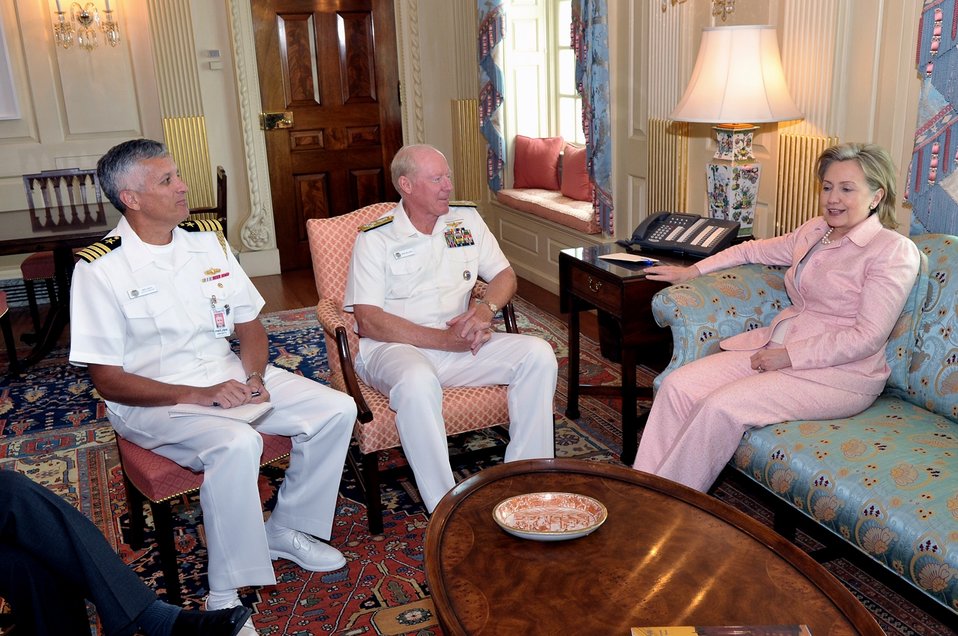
Secretary Clinton Meets With U.S. Admiral Robert F. Willard and Captain Michael Smith

U.S. Secretary of State Hillary Rodham Clinton meets With Admiral Robert F. Willard, U.S. Navy, Commander, U.S. Pacific Command (PACOM), and Captain Michael Smith, at the U.S. Department of State in Washington, D.C., May 14, 2010.